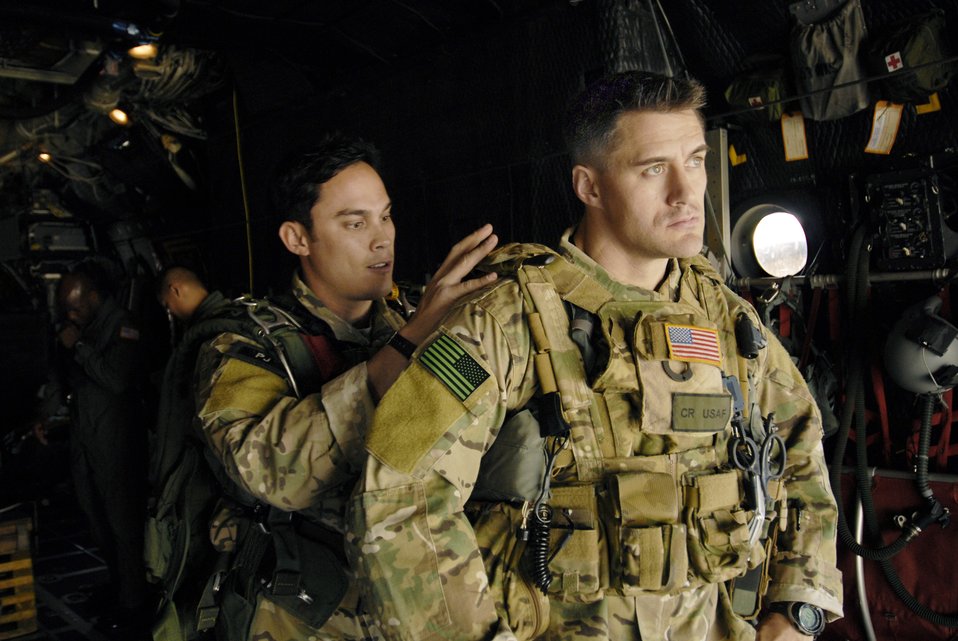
Kadena Airmen jump over le Shima Island

Staff Sgt. Ryan Hatfield checks Master Sgt. Jeremiah Coomer before a high-altitude low-opening jump over Ie Shima Island, Japan Dec. 23, 2009. Both Airmen are with the 320th Special Tactics Squadron at Kadena Air Base, Japan. The jump was part of routine training for the 320th STS and the 31st Rescue Squadron.